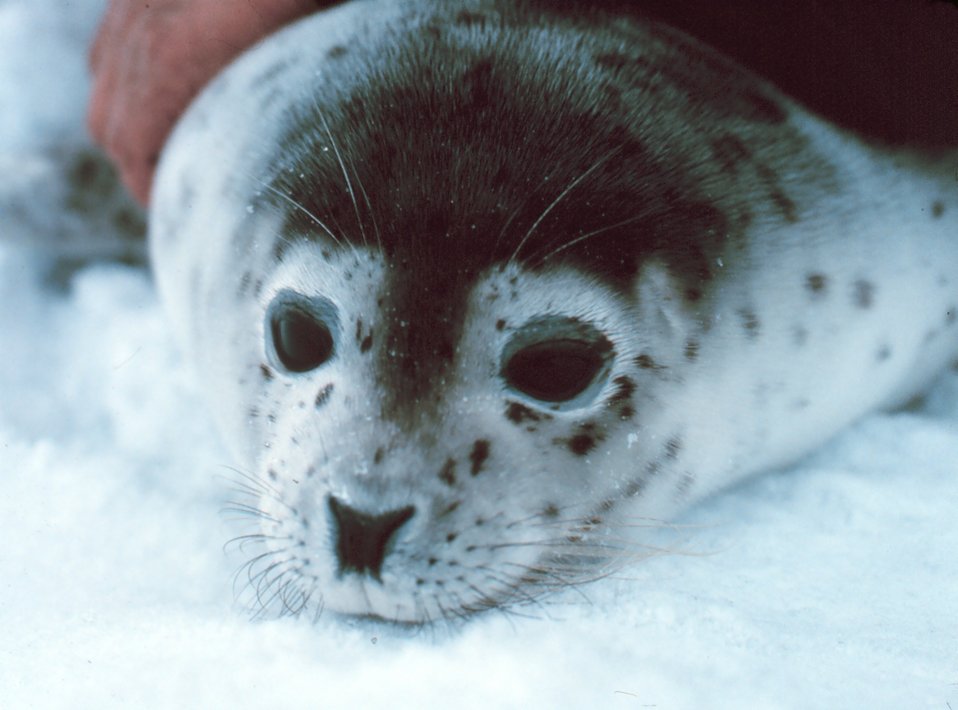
Spotted seal - Phoca largha.